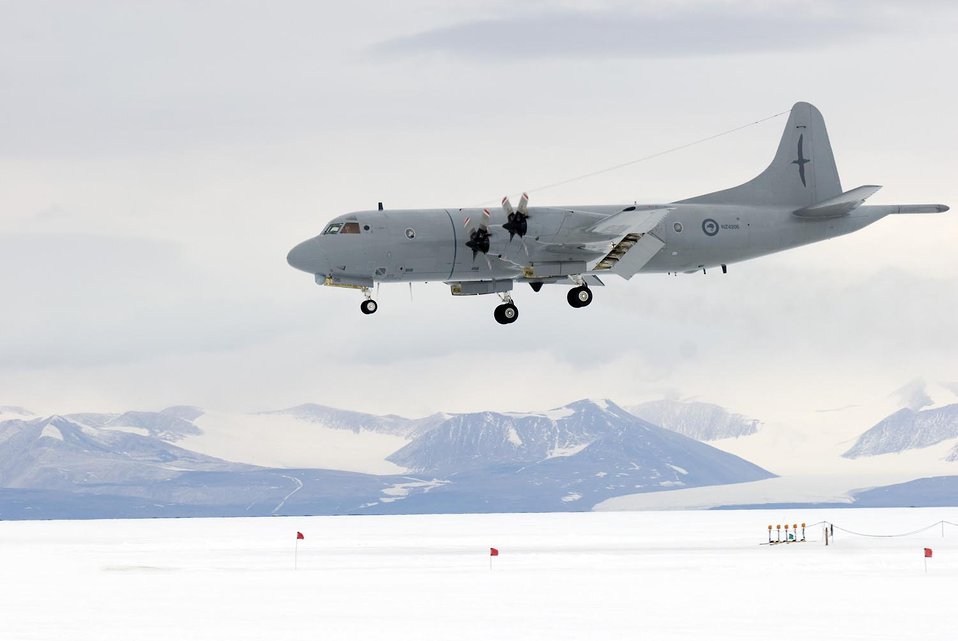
New Zealand airmen assist U.S. in mission

A Royal New Zealand Air Force P3-Orion lands on the ice runway at McMurdo Station, Antarctica.